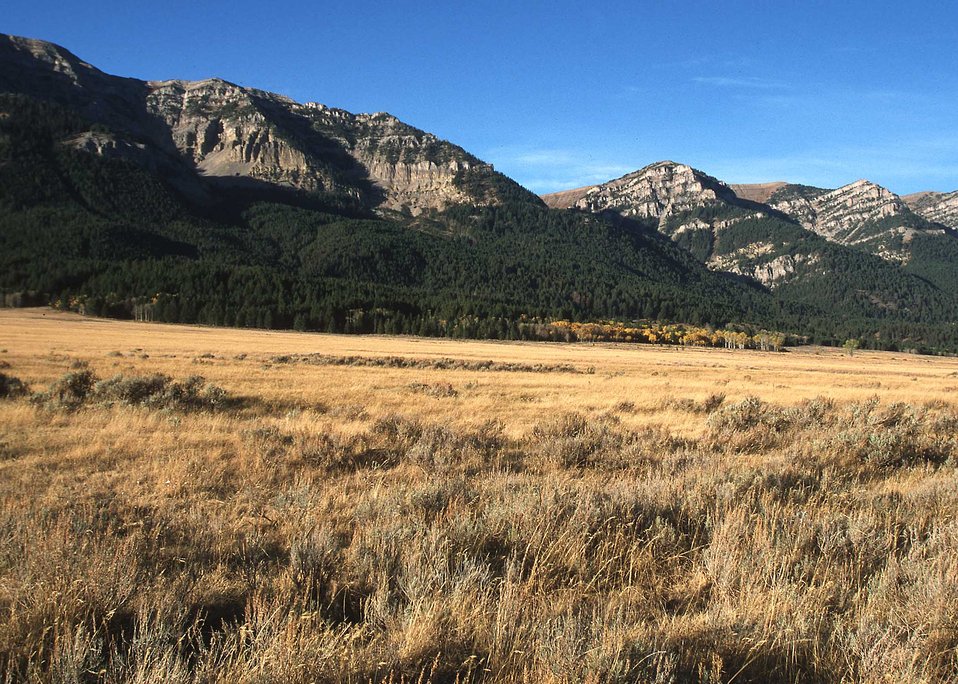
Scenic rangeland and wildlife habitat.